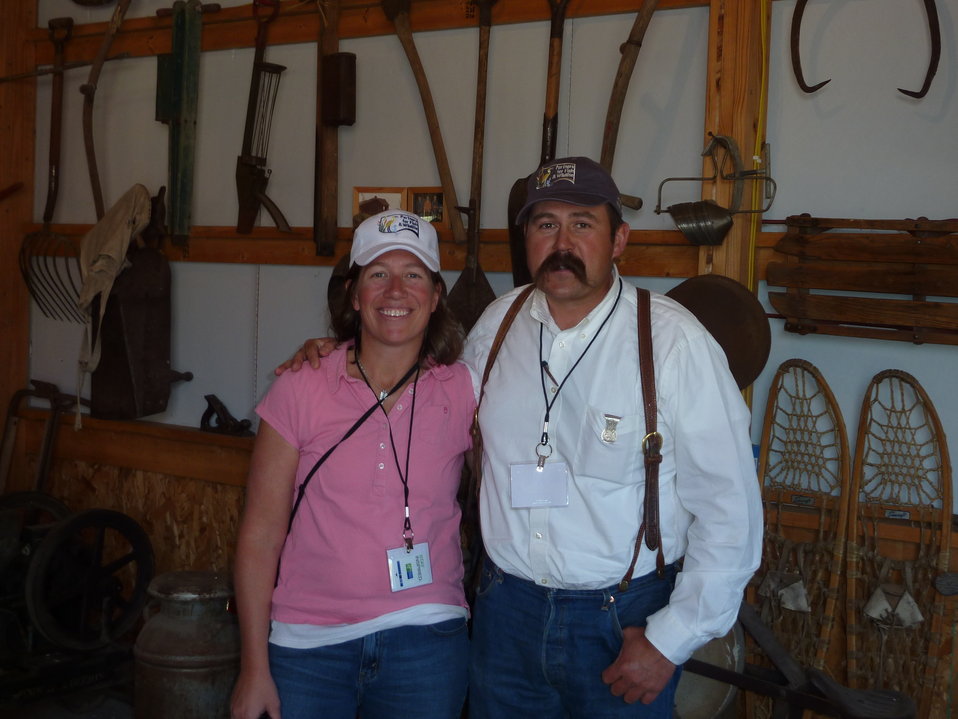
Private Lands Day 2011

South Dakota